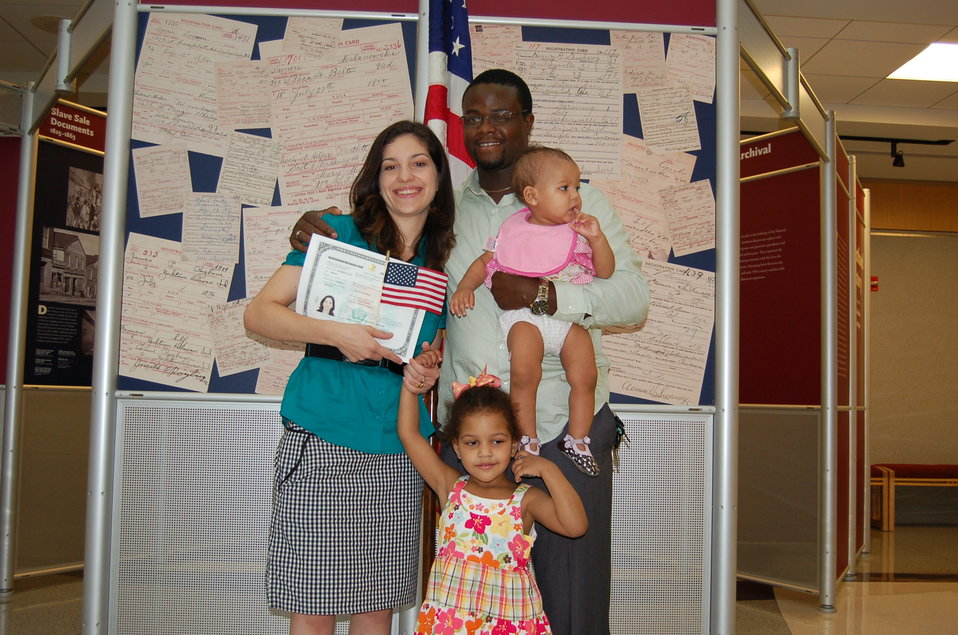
New Citizens